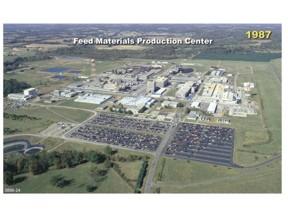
Fernald Site

An aerial photo of the Fernald Site in Ohio from 1987, before cleanup activities had begun. In 1991 DOE began restoration of the site which included clean up of six waste pits, soil and groundwater remediation, waste treatment and disposal, demolition of over 300 buildings, and ecological restoration of 900 acres of the site to be used as a future nature reserve. The cleanup activities were completed in 2006.